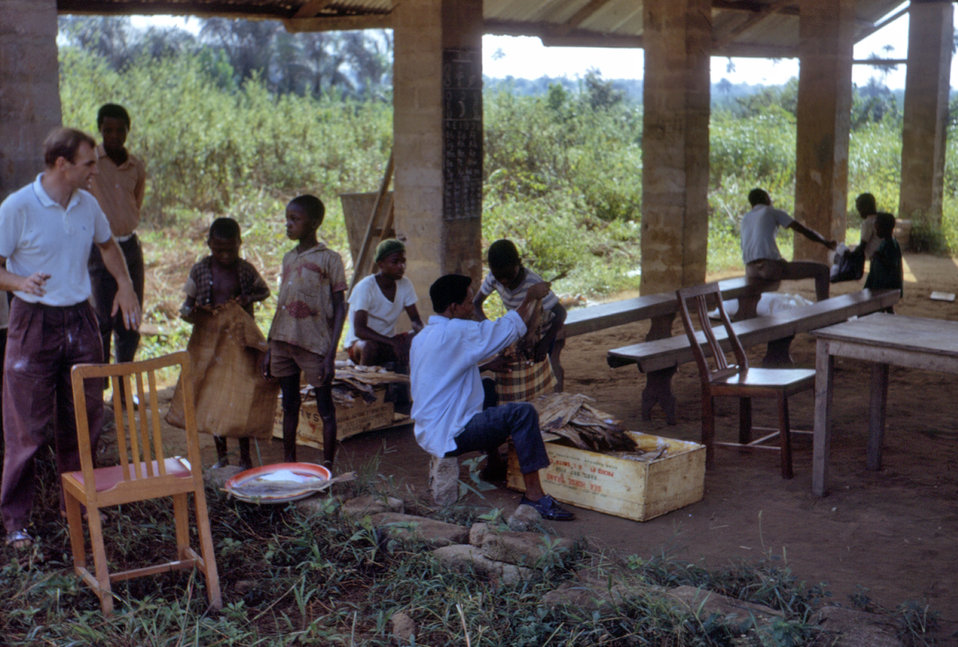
During the Nigerian-Biafran civil war, many Nigerian schools, like the one in this photograph, were used as clinics, or food distribution points for refugees.